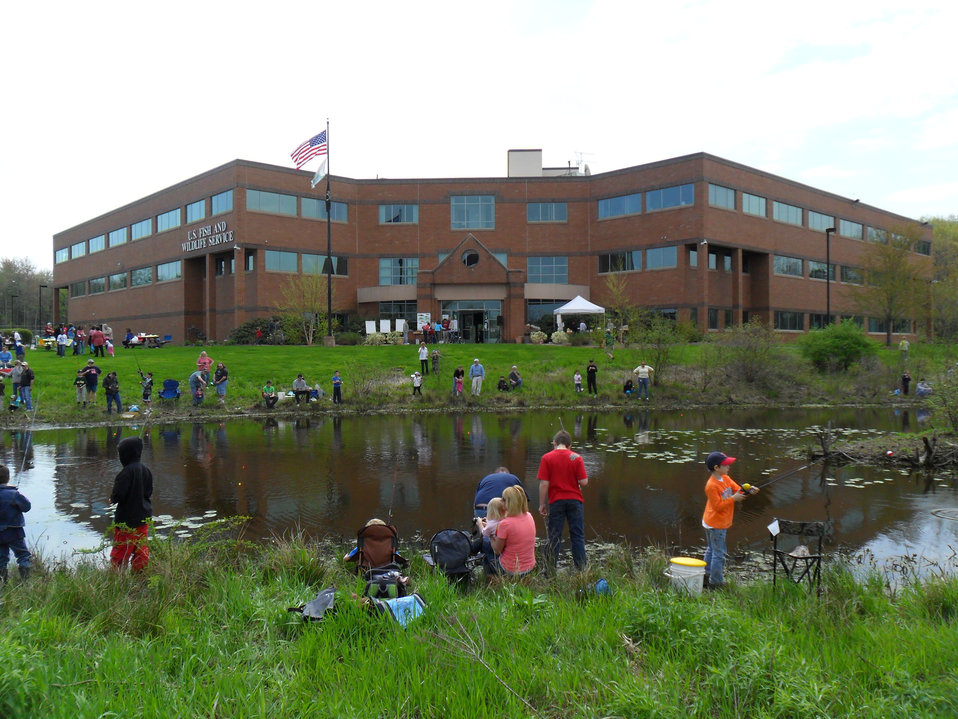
Fishing Derby at the USFWS regional office in Hadley, MA held May 7, 2011.